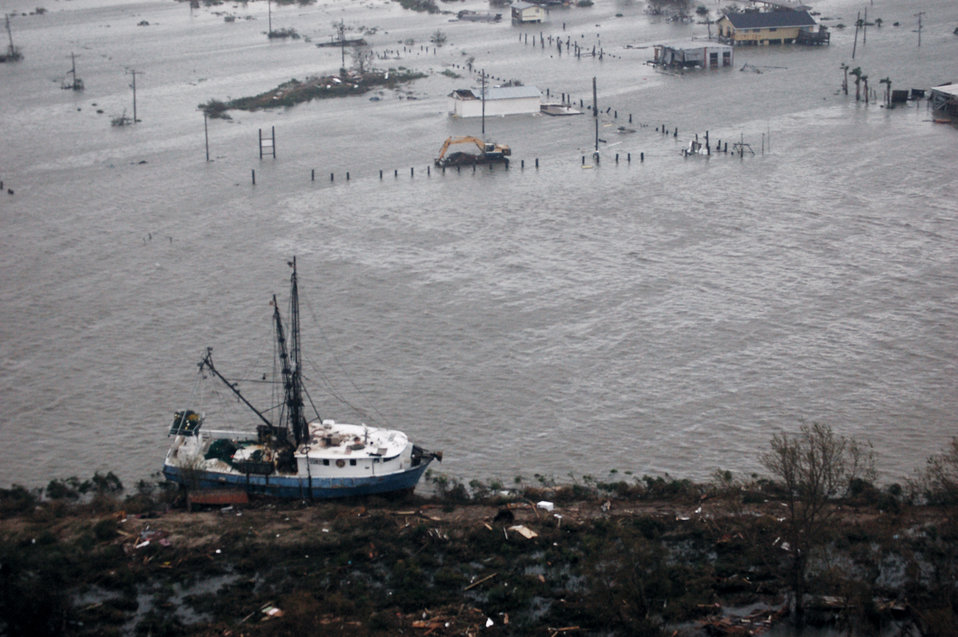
Airmen survey Ike damage

Airmen aboard an HH-60G Pave Hawk survey the damage caused by Hurricane Ike Sept. 13 around Galveston, Texas. Airmen from across the Air Force are deployed to the 331st Air Expeditionary Group at Randolph Air Force Base, Texas, to assist with rescue operations.